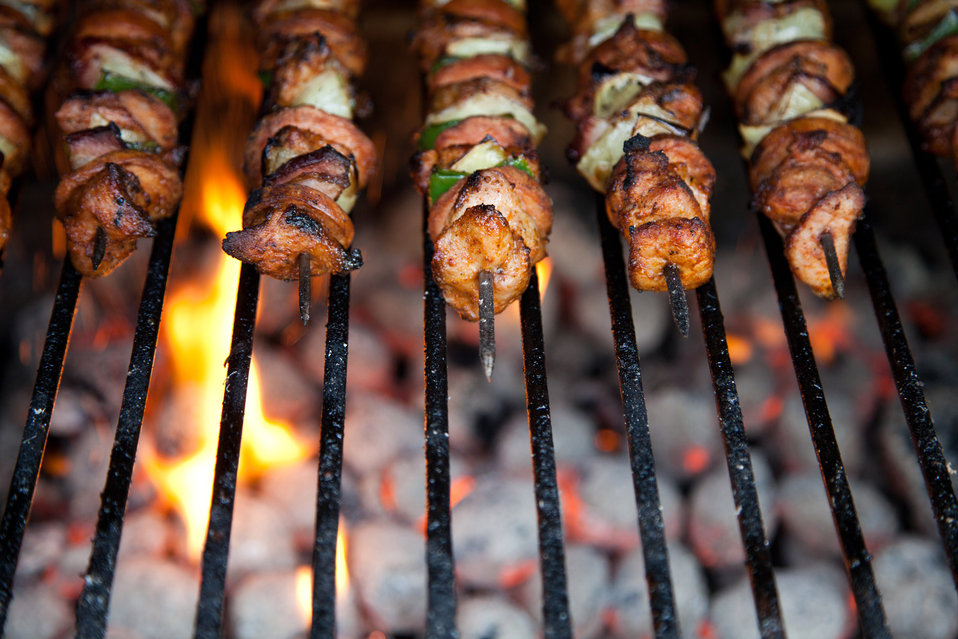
Kebab on skewers roasting on fire.